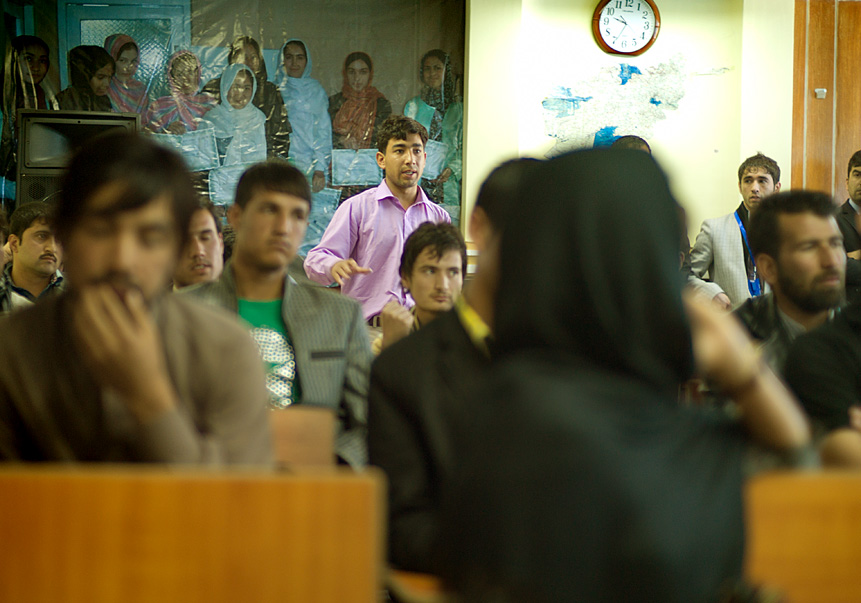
A question from the back